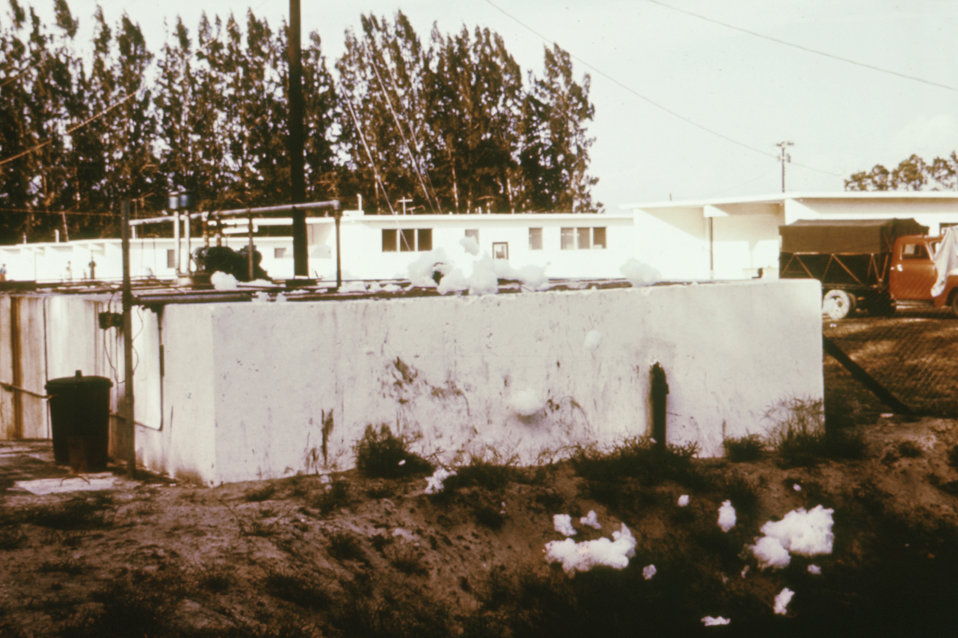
This was part of a series used to familiarize public health inspectors with sanitation conditions in migrant worker camps.